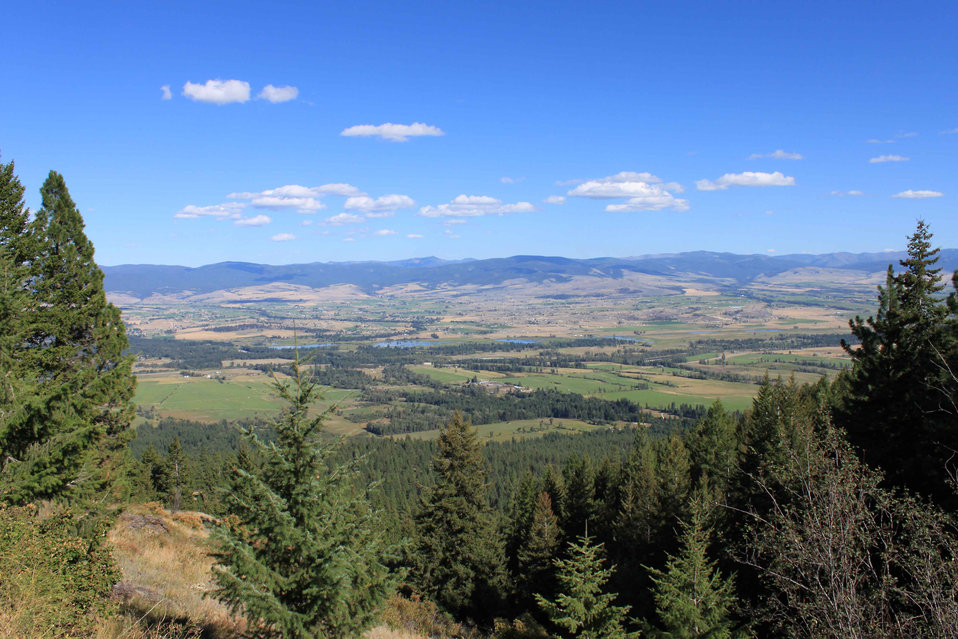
6000' Lookdown (from west) on Refuge

View of Refuge from Bass Creek NRA (USFS property) overlook.